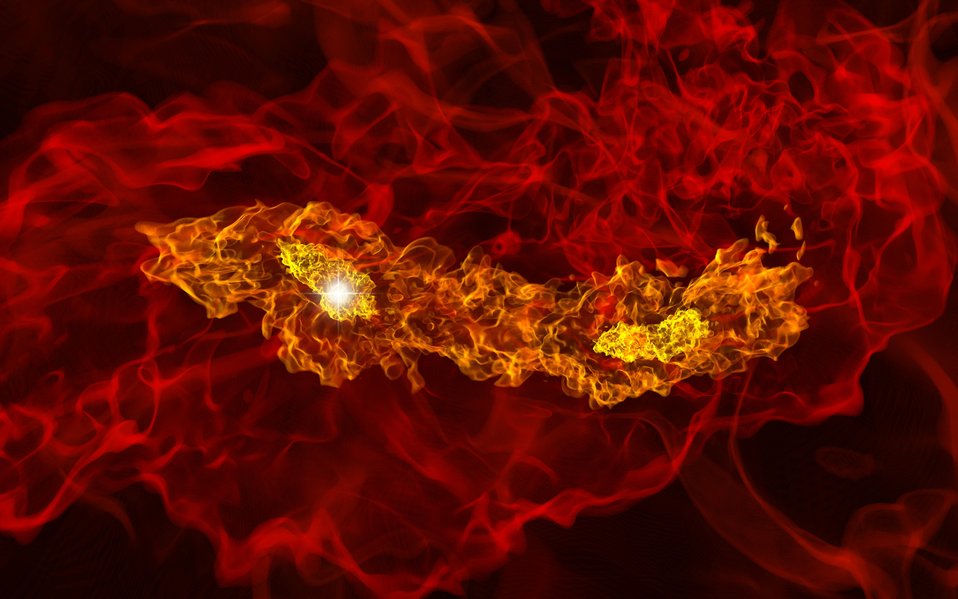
THIS COMPUTER-SIMULATED IMAGE SHOWS THE FORMATION OF TWO HIGH DENSITY REGIONS (YELLOW) IN THE EARLY UNIVERSE, APPROXIMATELY 200 MILLION YEARS THE BIG BANG.

THIS CORES ARE SEPARATED BY ABOUT 800 TIMES THE DISTANCE BETWEEN THE EARTH AND THE SUN AND ARE EXPECTED TO EVOLVE INTO A BINARY OR TWIN STAR SYSTEM.